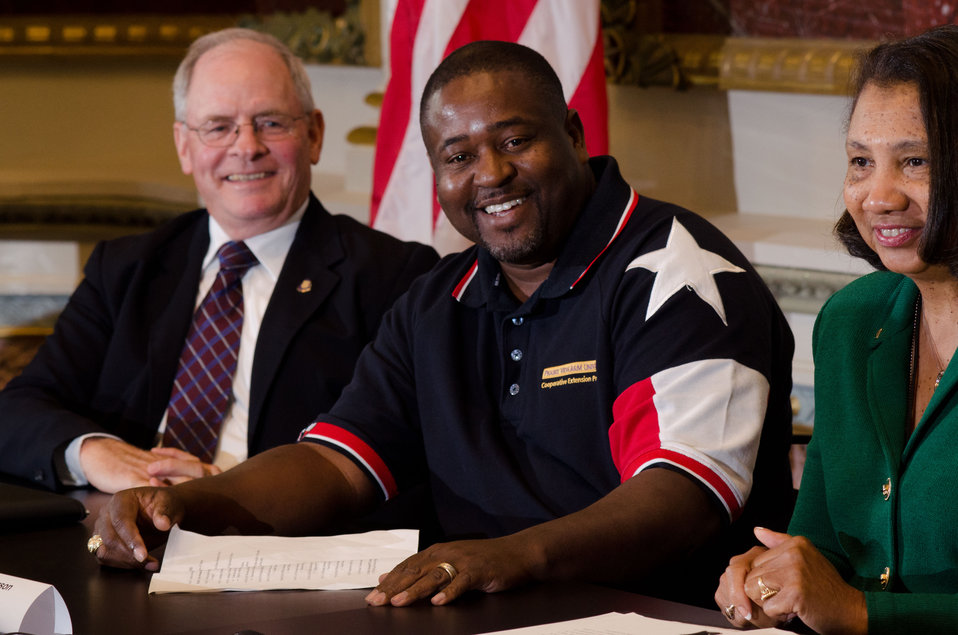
Texas A&M University Cooperative Extension Program 4-H & Youth Development Prairie View Program Specialist, Dr. Samuel G. Roberson Sr. speaks at the Champions of Change Recognition event in the Indian Treaty Room at the Executive Office Building in Washington, D.C. on Tuesday, Oct. 9, 2012. The Champions of Change program was created to honor ordinary Americans doing great work in their communities. Each week, a different sector is highlighted and groups of Champions, ranging from educators to entrepreneurs to community leaders, are recognized for the work they are doing to serve and strengthen their communities.